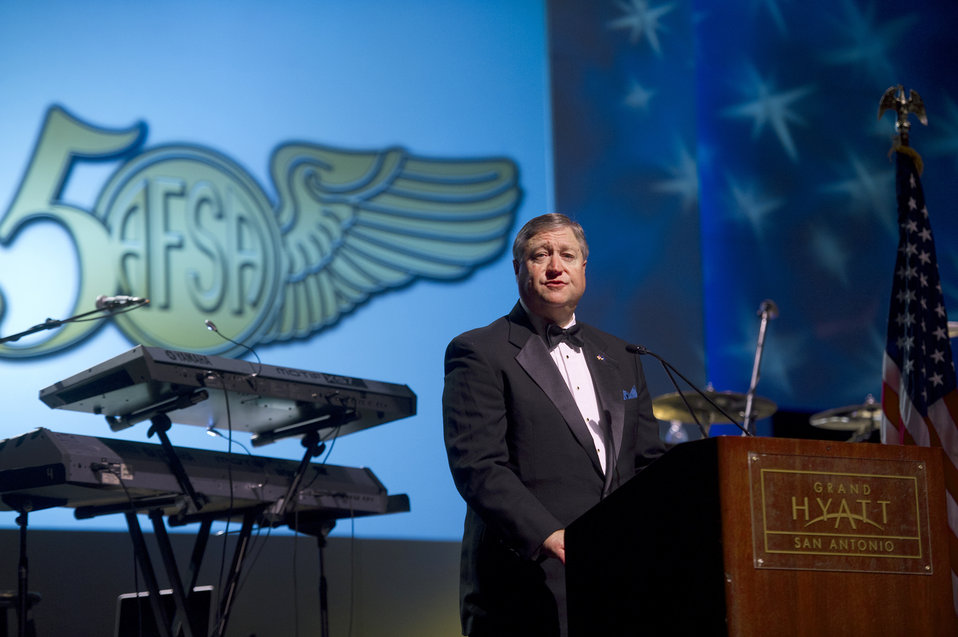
Air Force leaders laud AFSA, Airmen at gala

Secretary of the Air Force Michael Donley congratulates the Air Force Sergeants Association on its 50 years of dedicated service to enlisted Airmen July 27, 2011, at the Grand Hyatt Hotel in San Antonio. Donley spoke at the 2011 AFSA Professional Airmen’s Conference 50th Anniversary Gala.